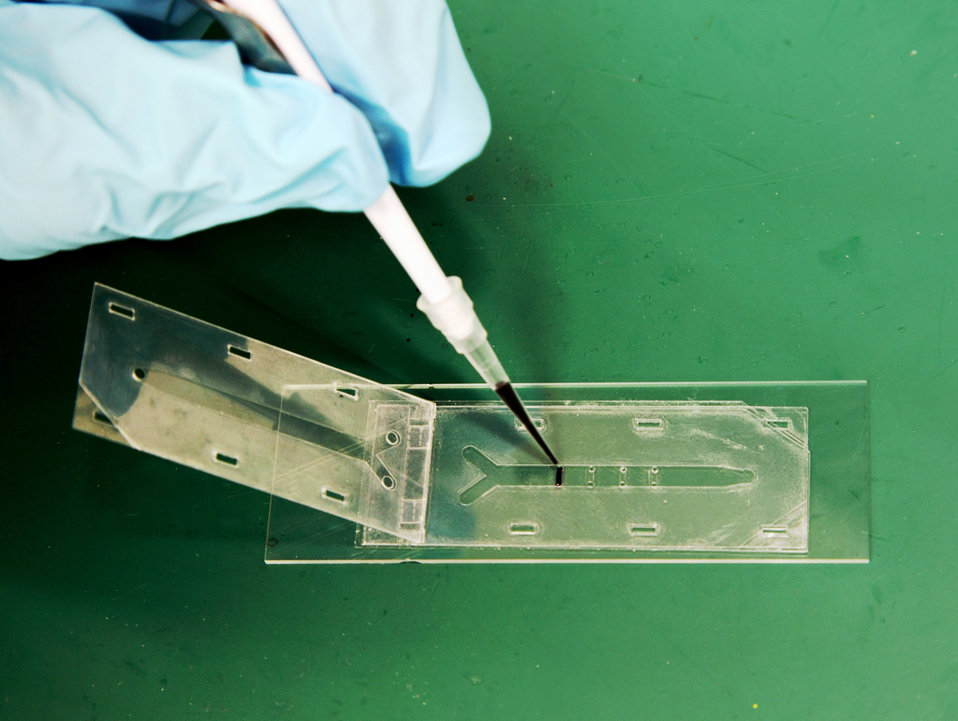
Microfluidic Device

NIST researchers have combined a glass slide, plastic sheets and double-sided tape to create an inexpensive and simple-to-build microfluidic device for exposing an array of cells to different concentrations of a chemical.